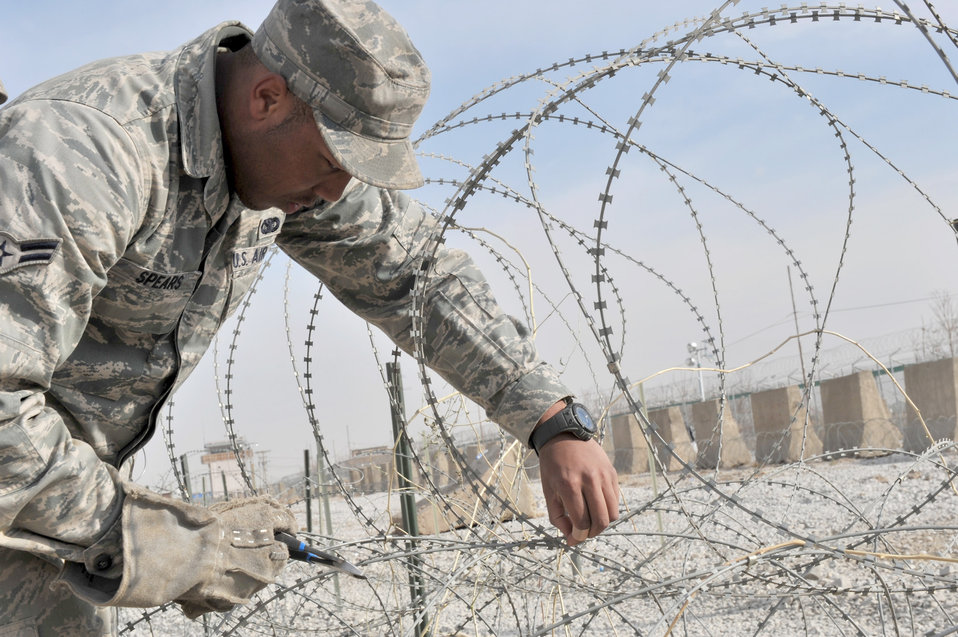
Security Forces Enhance Afghan Quality of Life

Airman 1st Class Brandon Spears helps remove concertina wire Dec. 30, 2010 at Bagram Airfield, Afghanistan. The security forces Airman are moving the c-wire from the gravel to a pavement walking path, which local-national employees use every day. The move of the C-wire is to improve the quality of life for the more than 5,000 local-national employees at Bagram Airfield. Airman Spears is a security-forces Airman with the 455th Expeditionary Security Forces Squadron.